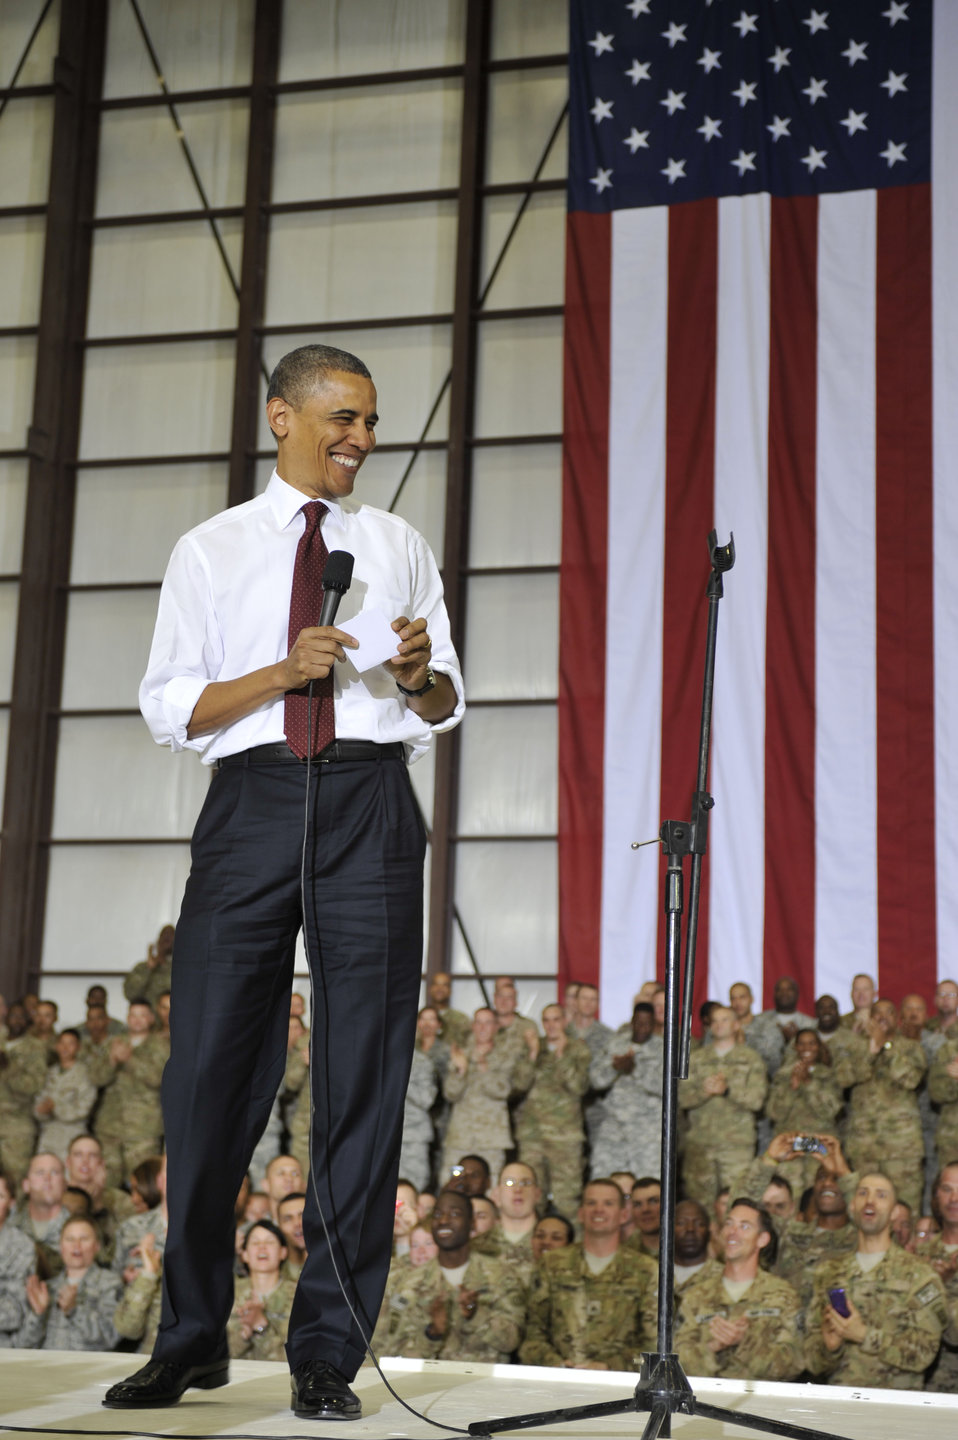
Obama makes surprise visit to Bagram Airfield

President Barack Obama visits Bagram Airfield, Afghanistan, May 1, 2012, to greet Soldiers, Sailors, Airmen and Marines on the anniversary of the death of al-Qaida leader Osama bin Laden. Obama told the crowd that he is proud of them and that many of the positive events in Afghanistan occurred in part because of the efforts of the U.S. armed services.